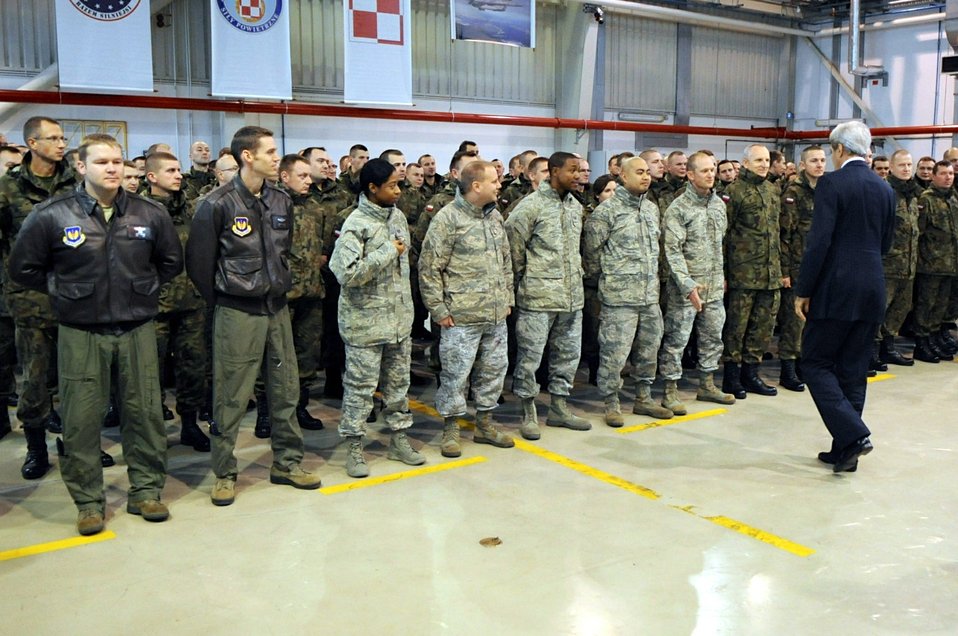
Secretary Kerry Greets American and Polish Troops

U.S. Secretary of State John Kerry greets American and Polish forces who live and work together in Poland during a visit to the Lask Military Airbase on November 5, 2013.